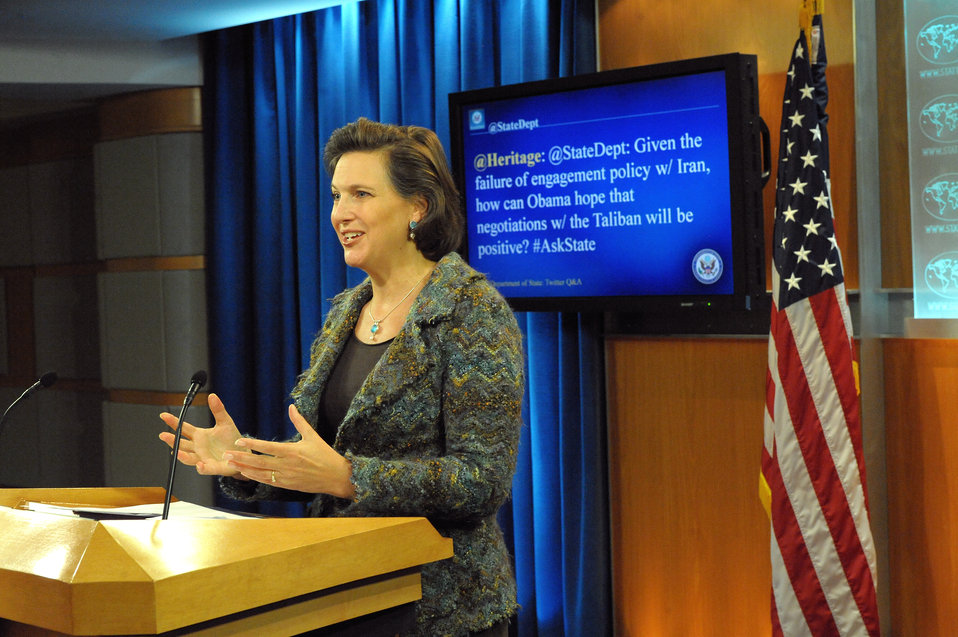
Spokesperson Nuland Responds to a Question from @StateDept

Victoria Nuland, Spokesperson for the U.S. Department of State, answers a question selected from the Department’s official English Twitter feed, @StateDept, on January 13, 2012.